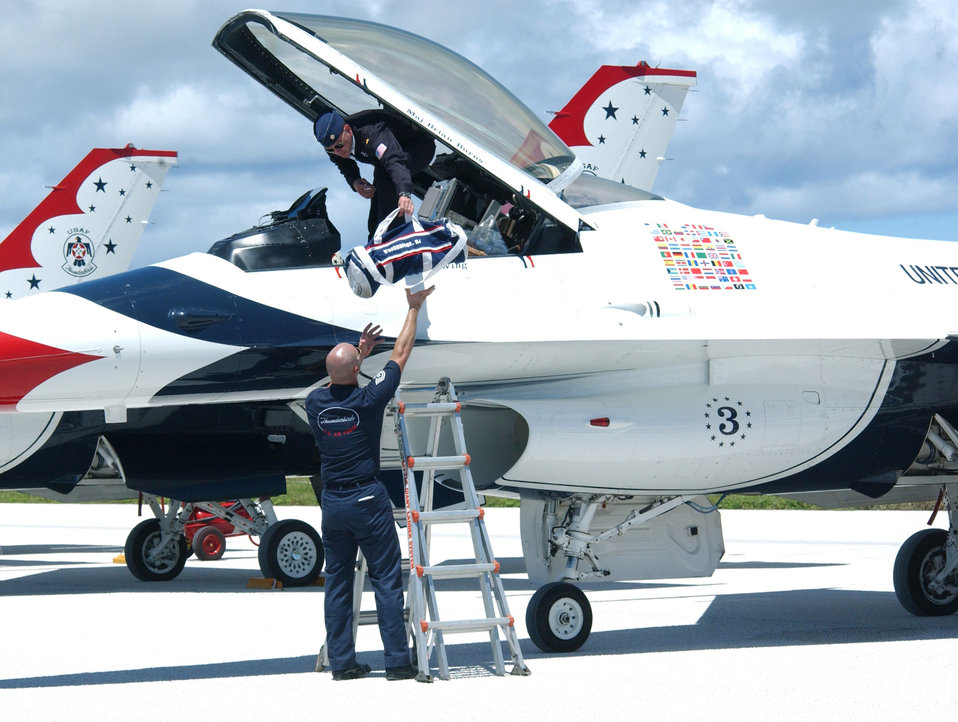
Airmen make an F-16 'Thunder-ready'

ANDERSEN AIR FORCE BASE, Guam -- Tech. Sgt. Brian Plauche helps Thunderbird pilot Maj. Brian Burns out of his aircraft here Sept. 9. Airmen from the U.S. Air Force Air Demonstration Squadron recently spent five months turning a gray combat-ready F-16 Fighting Falcon into a red, white and blue team aircraft. Sergeant Plauche is a team crew chief.